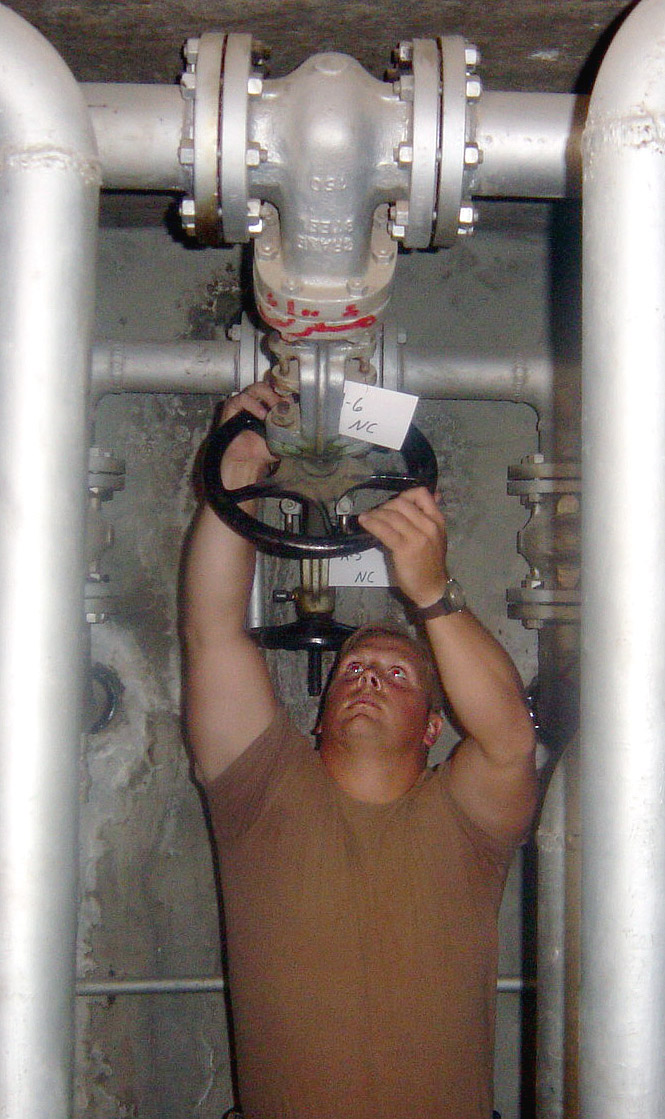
Staten

KIRKUK AIR BASE, Iraq (AFPN) -- Tech. Sgt. Ronald Staten adjusts the pressure in a captured Iraqi underground fuel storage tank. Airmen here renovated eight tanks to give them an additional 240,000 gallons of storage space. Staten is assigned to the 506th Expeditionary Logistics Readiness Squadron fuels branch here.